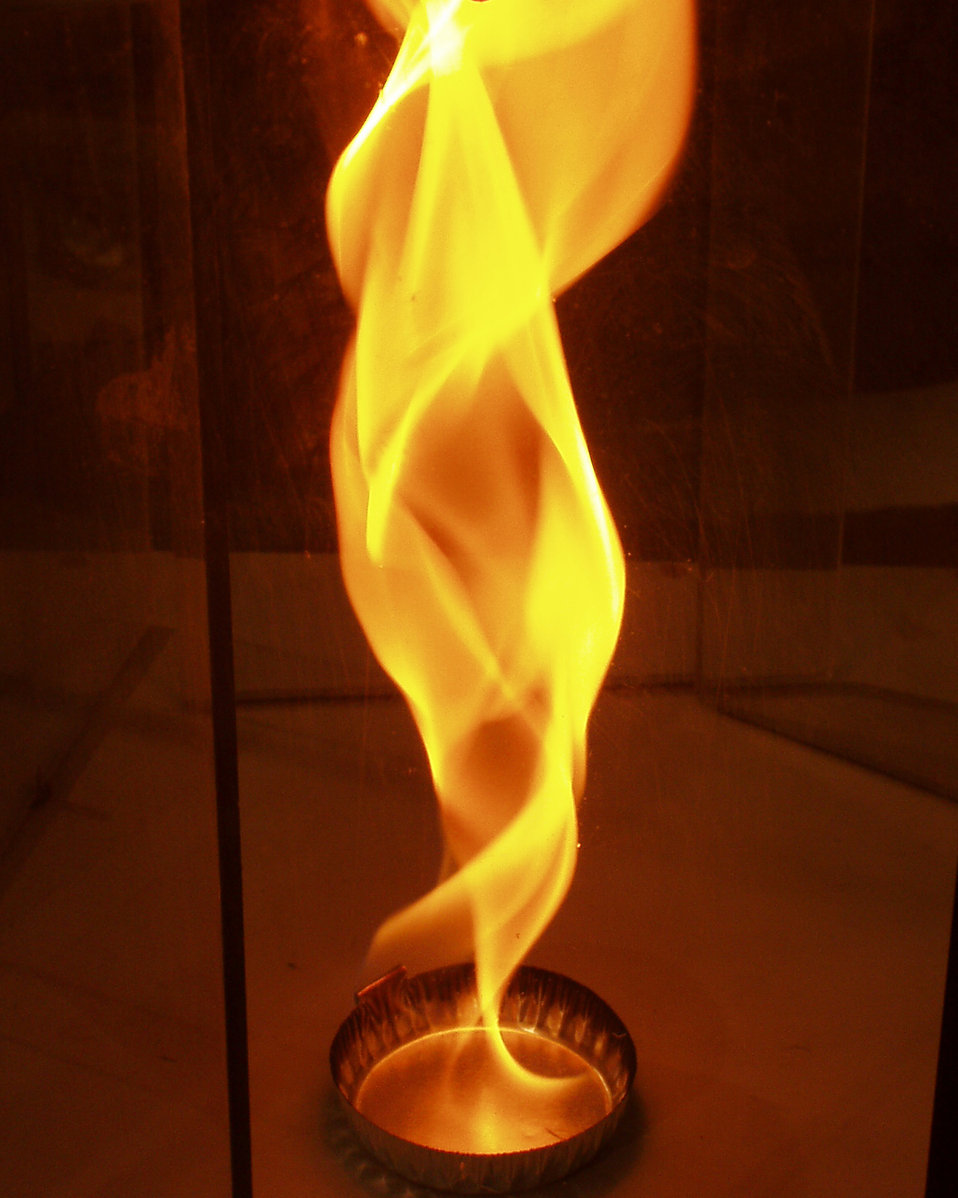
Fire Research; Fire Tests; Fire Whirl

A 'fire whirl'--one of the demonstrations in the Fire Dynamics and Fire Modeling web training course-- illustrates the dramatic changes that ventilation can have on a fire.